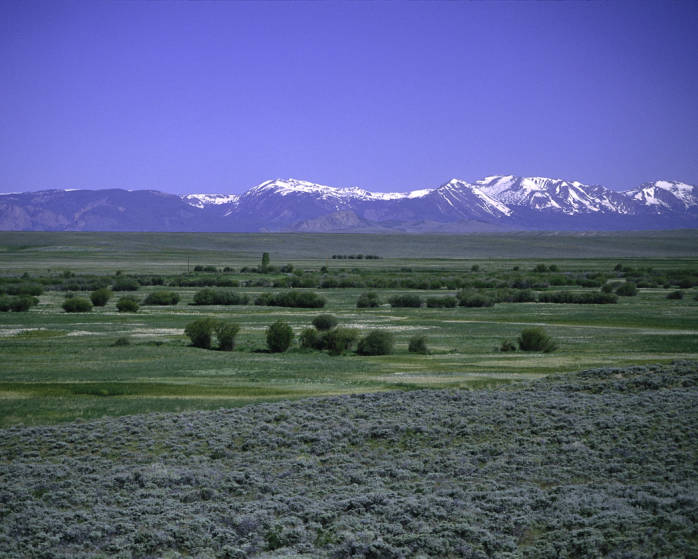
Landscape

A beautiful shot of the landscape at Arapaho National Wildlife Refuge in Colorado.